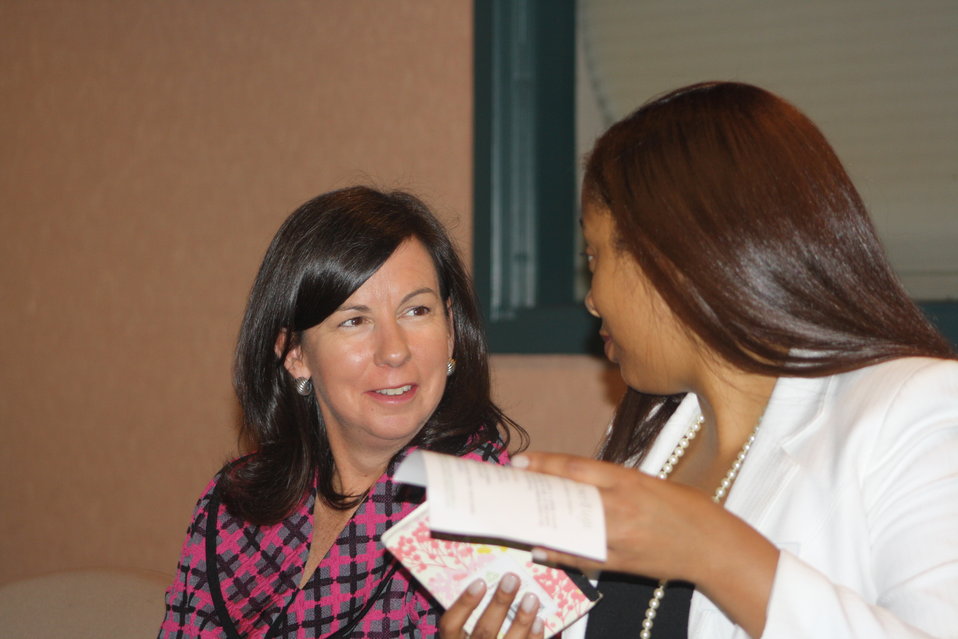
Faith-Based and Neighborhood Partnership launch at Atlanta's Carter Center